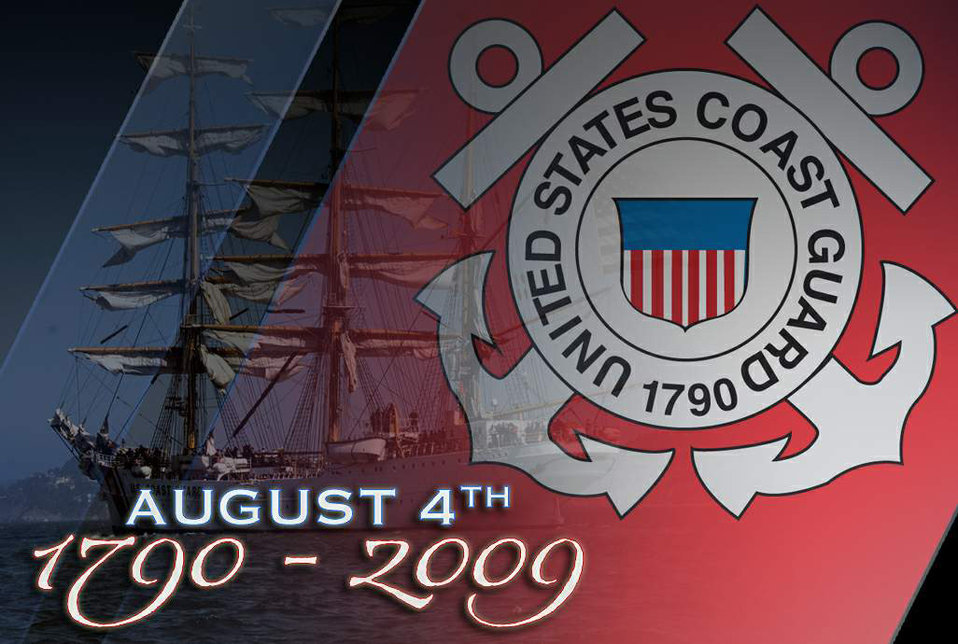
Joint Chiefs of Staff chairman cites Coast Guard's 219th birthday

Treasury Secretary Alexander Hamilton convinced Congress to authorize construction of 10 topsail schooners Aug. 4, 1790, for the U.S. Revenue-Marine to combat widespread smuggling. Our nation proudly celebrates that day 219 years ago when the U.S. Coast Guard was born.